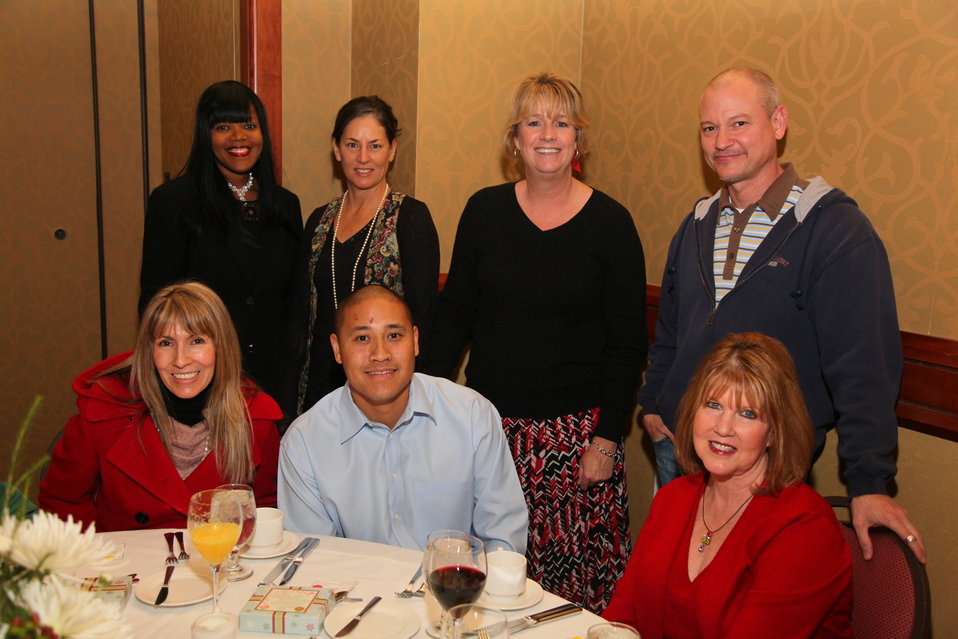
Sacramento District Holiday Party 2011